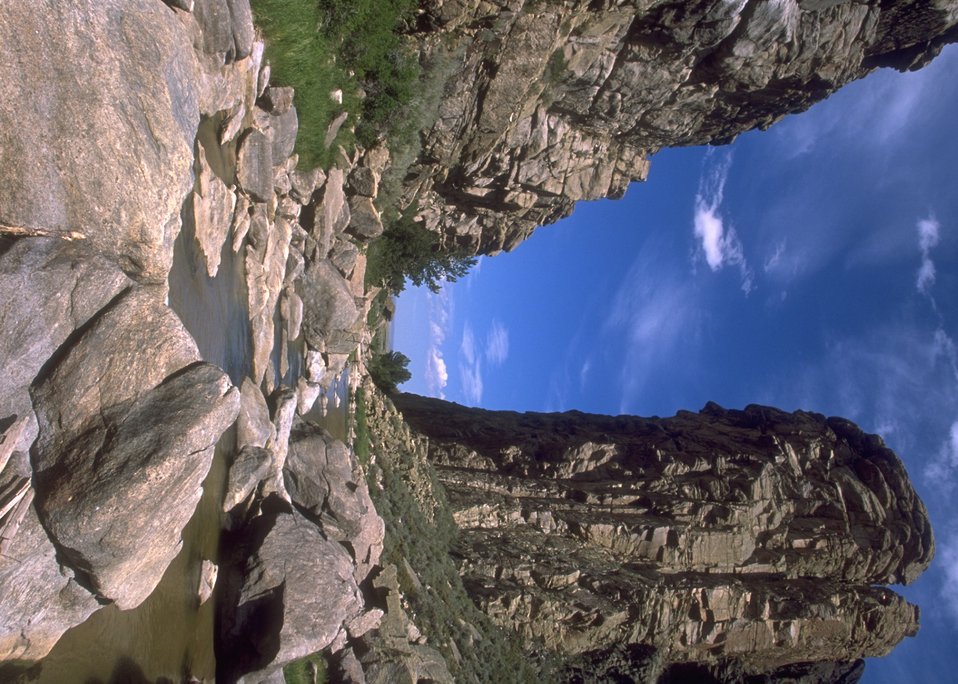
Devil's Gate historic site, Rawlins Field Office.